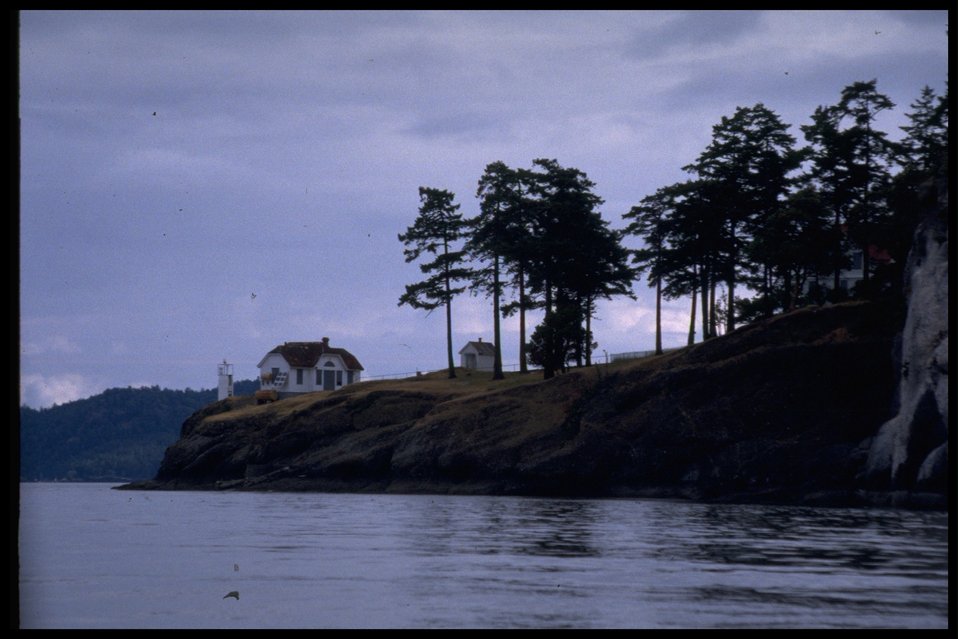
Turn Point from water with light station and buildings. Series of 17 photos.